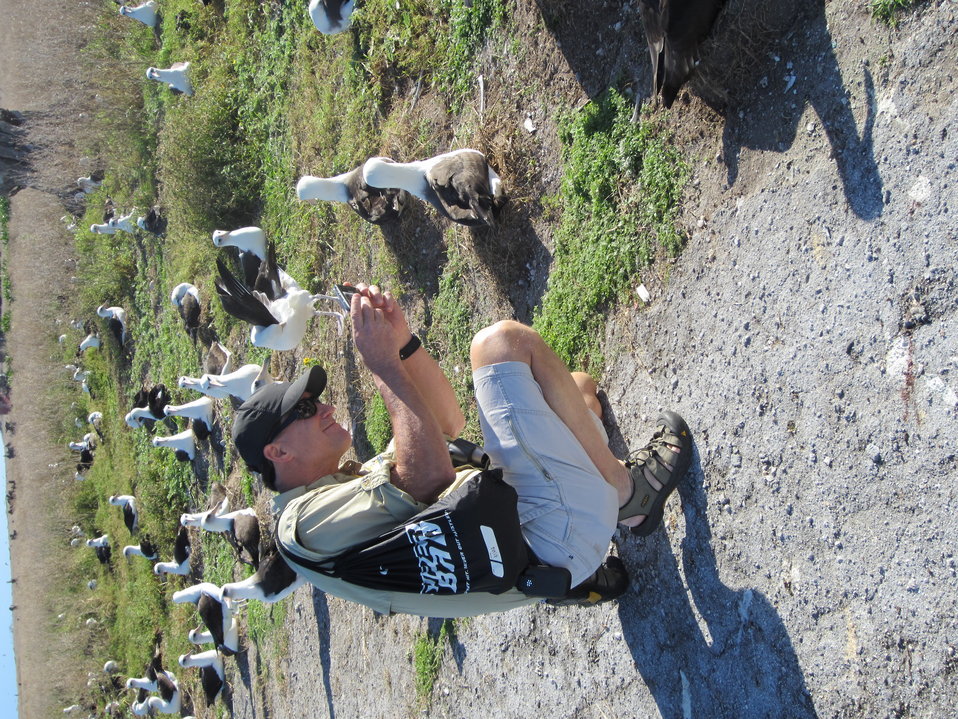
USFWS Director, Dan Ashe, Captures a photo of a Laysan Albatross on the East Island during his recent visit to Midway Atoll NWR